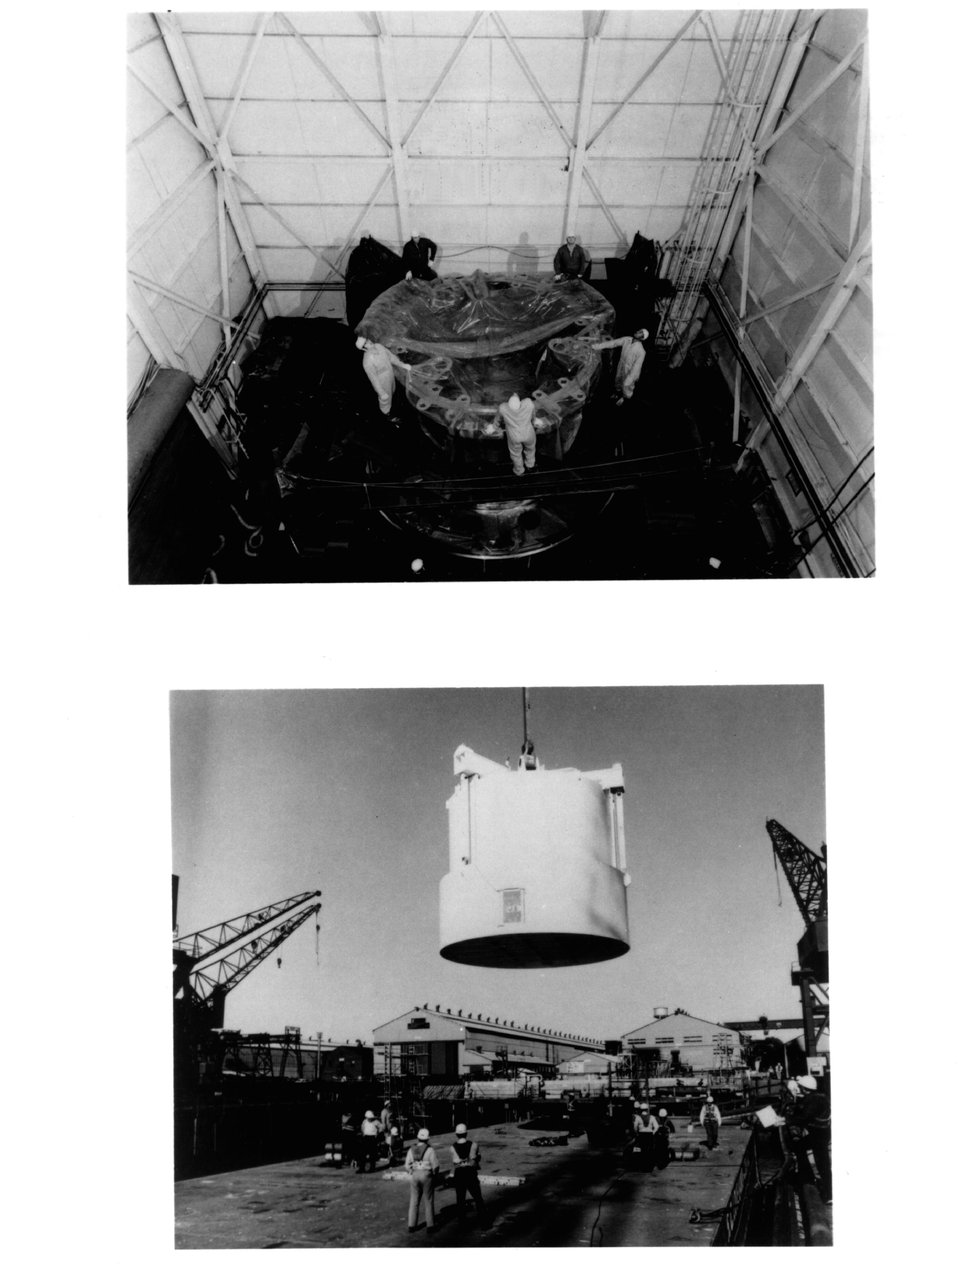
FFTF...(top) the core support structure for the Fast Flux Test Facility (FTFF) is being wrapped in plastic before installation in its shipping container at the Newport News, Va. Shipping and Dry Dock Co., Newport News, Va. (Bottom) The core support structure inside of the container, for the FFTF is lowered into a barge at Newport News for its journey through the Inter-coastal-Waterway and up the Mississippi, Ohio, and Tennessee Rivers to Chattanooga, Tenn. for final assembly. Circa 1974.